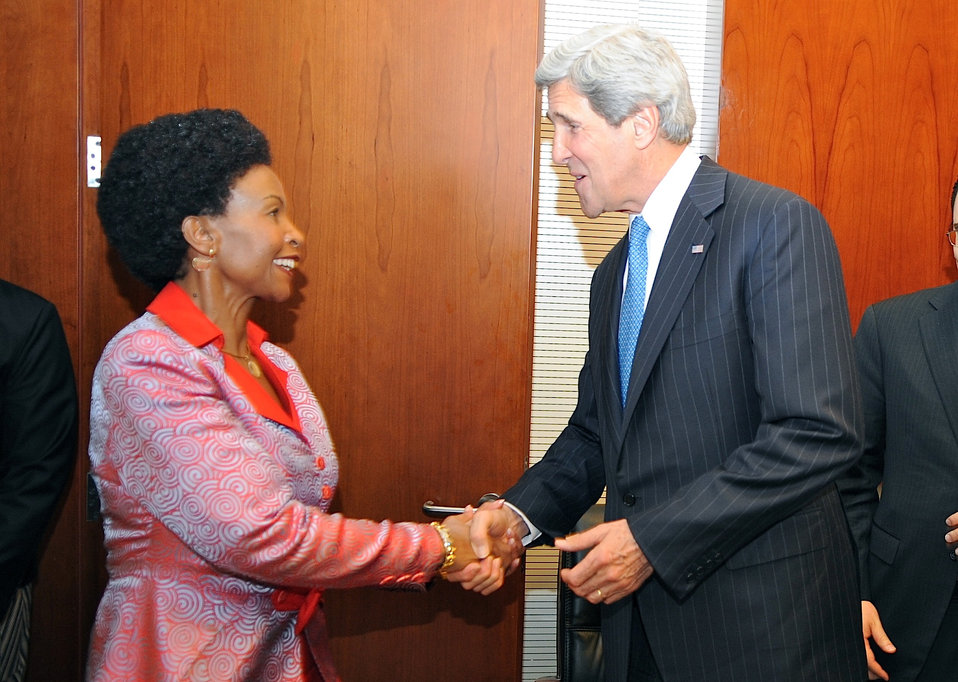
Secretary Kerry Meets With South African Foreign Minister Nkoana-Mashabane

U.S. Secretary of State John Kerry meets with South African Foreign Minister Maite Nkoana-Mashabane during a break at the 50th anniversary African Union Summit in Addis Ababa, Ethiopia, on May 25, 2013.